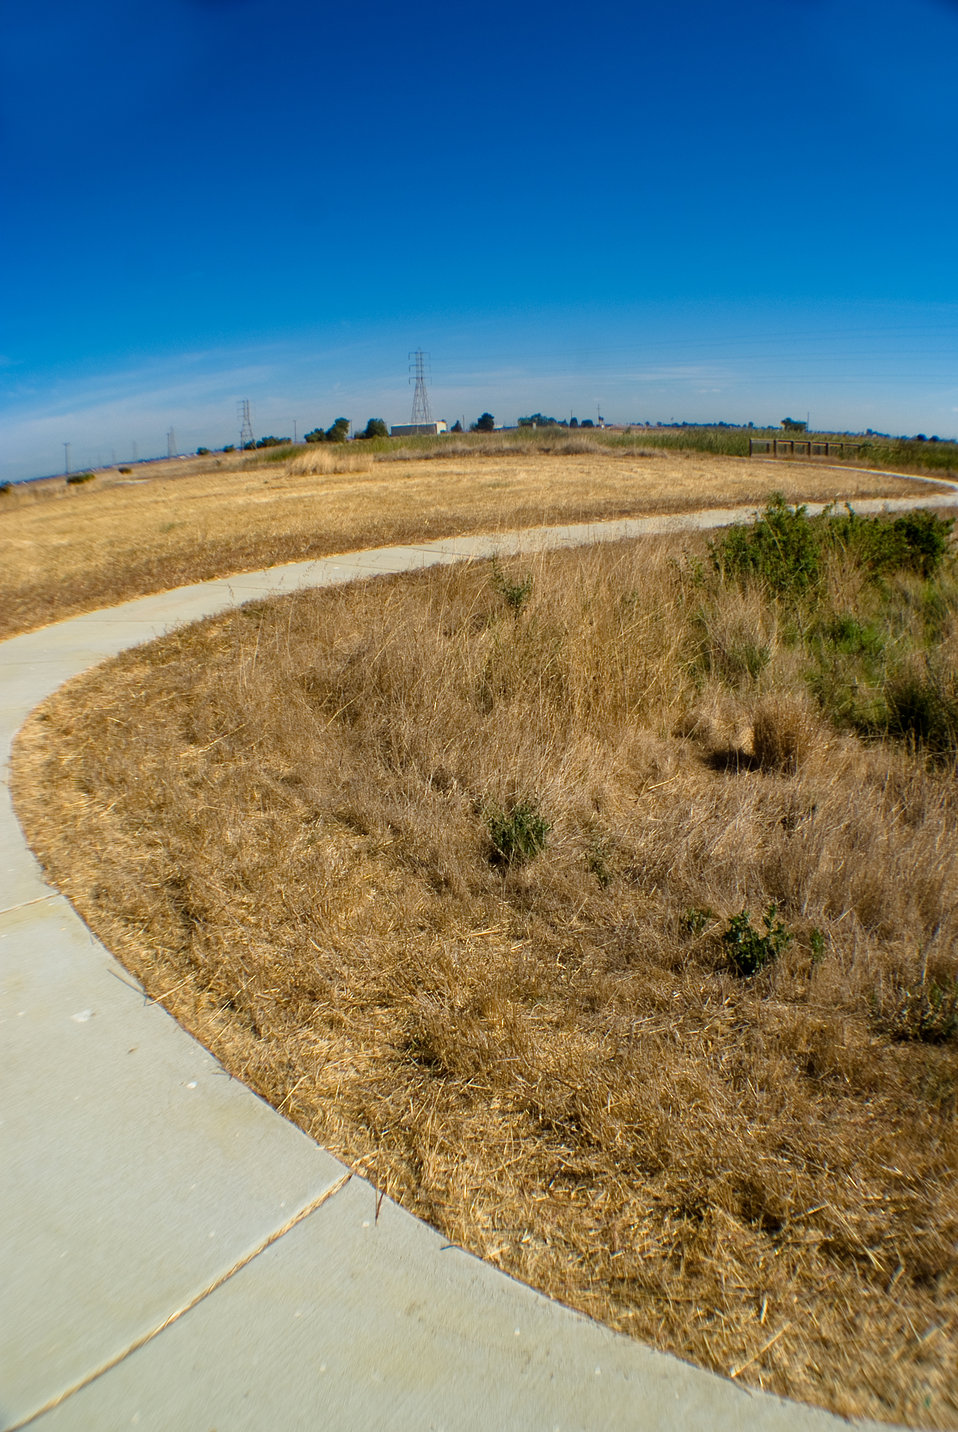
Trail on Stone Lakes National Wildlife Refuge

Stone Lakes National Wildlife Refuge. This 3,084-foot trail was built with funds from the American Recovrey &Reinvestment Act. The Stone Lakes Refuge is located just south of Sacramento, CA